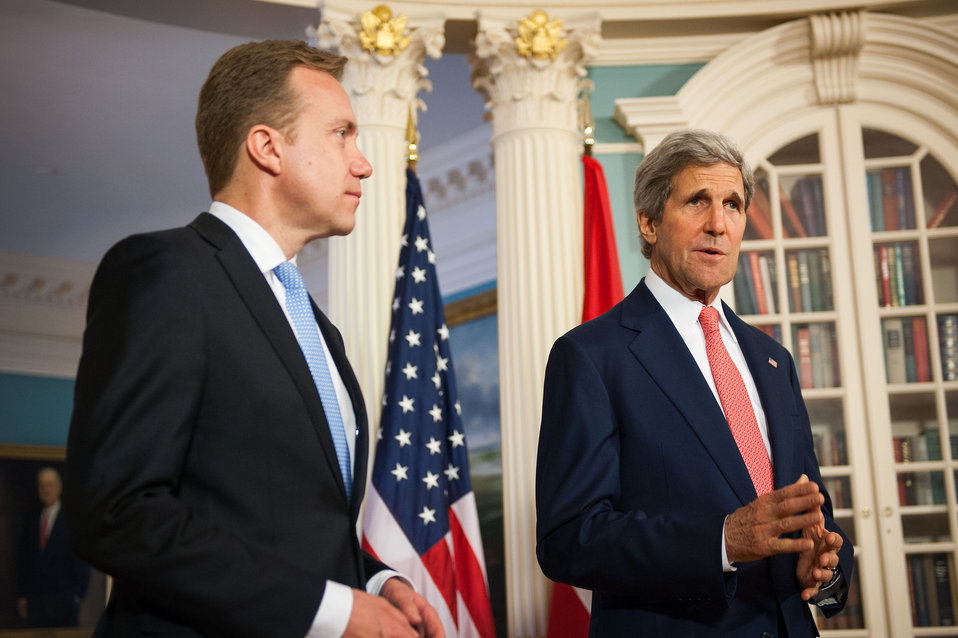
Secretary Kerry and Norwegian Foreign Minister Brende Address Reporters

U.S. Secretary of State John Kerry and Norwegian Foreign Minister Borge Brende address reporters after their bilateral meeting at the U.S. Department of State in Washington, D.C., on April 24, 2014.